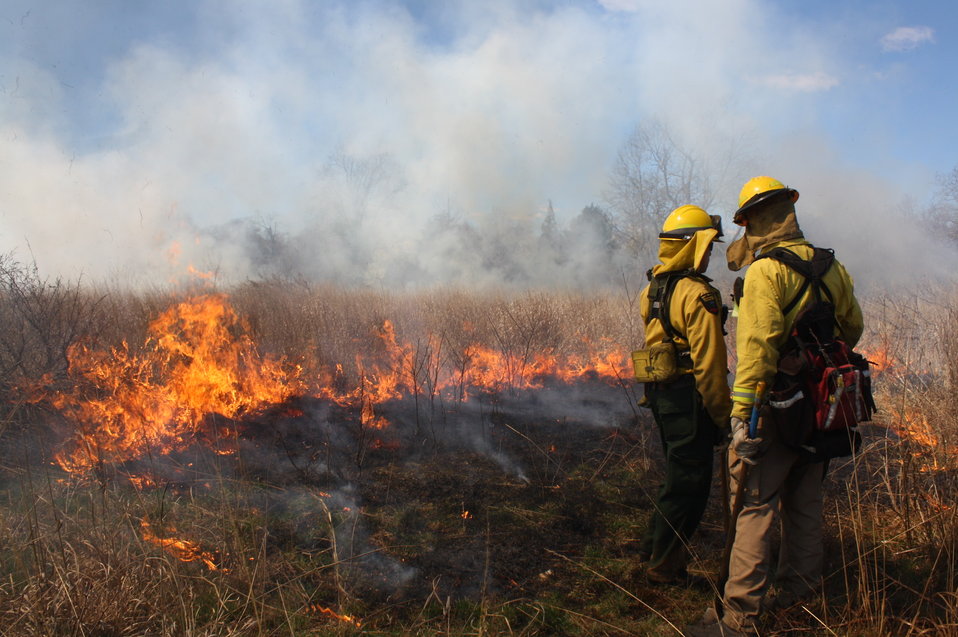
Prescribed burn at Sayville NWR

Refuge staff conducting a prescribed burn at Sayville National Wildlife Refuge.